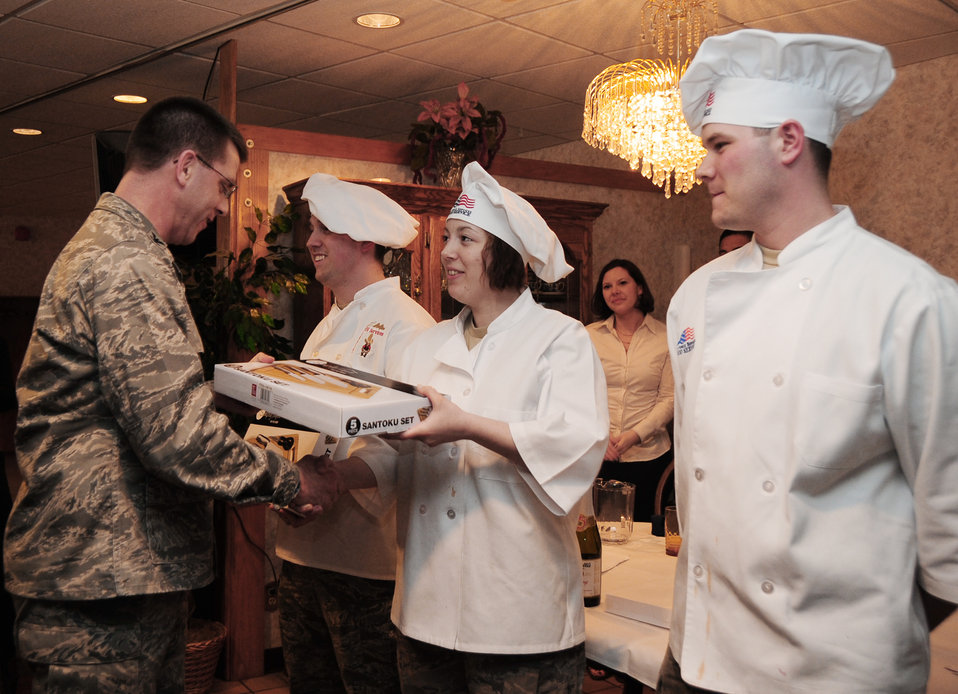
Ellsworth Airmen participate in cooking competition

Col. Steven Hiss (left) presents Airmen 1st Class Tiffany Lamb and Brent Smith and Airman Reese Audette with a four-piece knife set during the